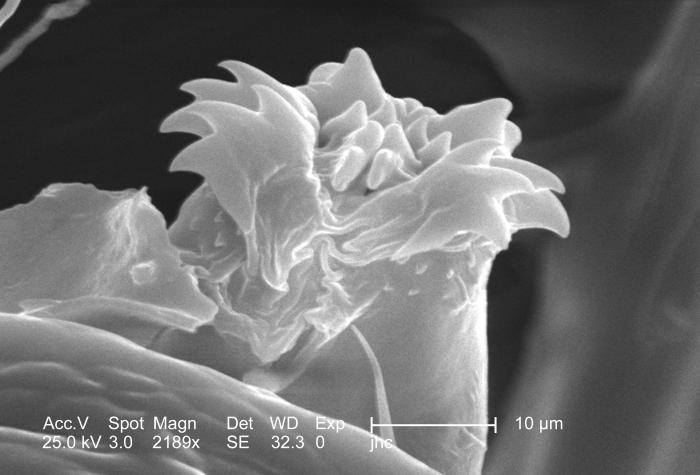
Under a high magnification of 2189x, this 2006 scanning electron micrograph (SEM) depicted an enlarged inferior-oblique view of the mouthparts found on the cephalic, or head region of a male body louse, Pediculus humanus var. corporis. The 'floral'-like structure in this field of view represents the labial funnel, or 'haustellum', which is a tube-like structure, formed from what is believed to be a modification of the labium, but is armed with teeth, which act to grab, and hold on to the skin surface of its host while obtaining its blood meal. The insect pierces the host's skin with its sharply-pointed set of three stylets, and together, form what is termed the fascicle, which is hidden from view in this image. Note PHIL# 9214, 9216, in which case a louse is in its feeding mode on the skin surface of its host.